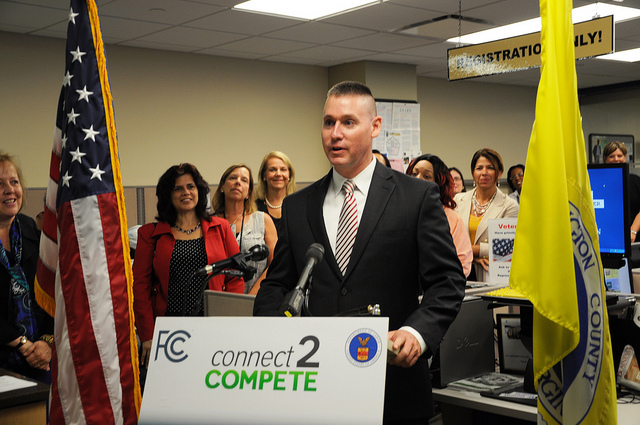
Connect to Compete 7.16.12

Frank O'Brian, American Job Center client speaking on his experiences with Connect to Compete